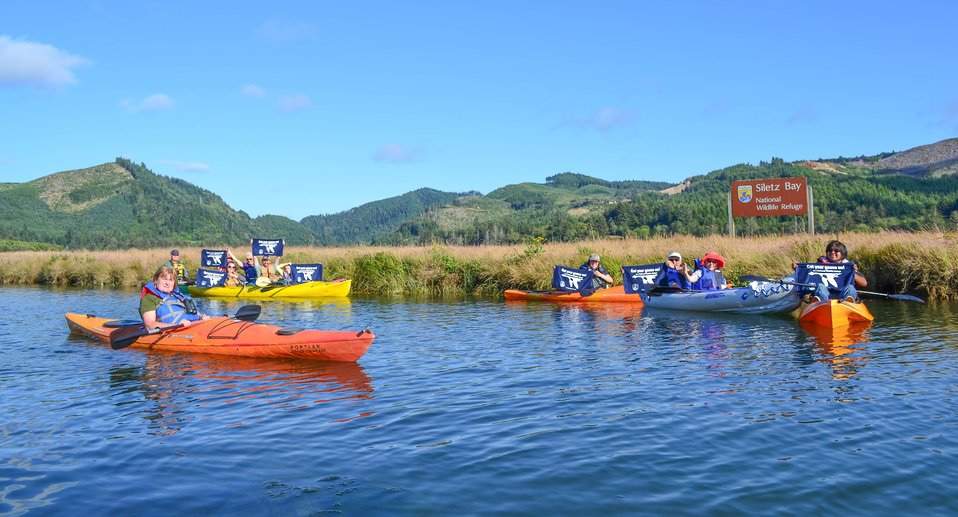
Get Your Goose On! at Siletz Bay NWR

Anna and Fiona get their goose on during a paddle trip at Siletz Bay NWR!